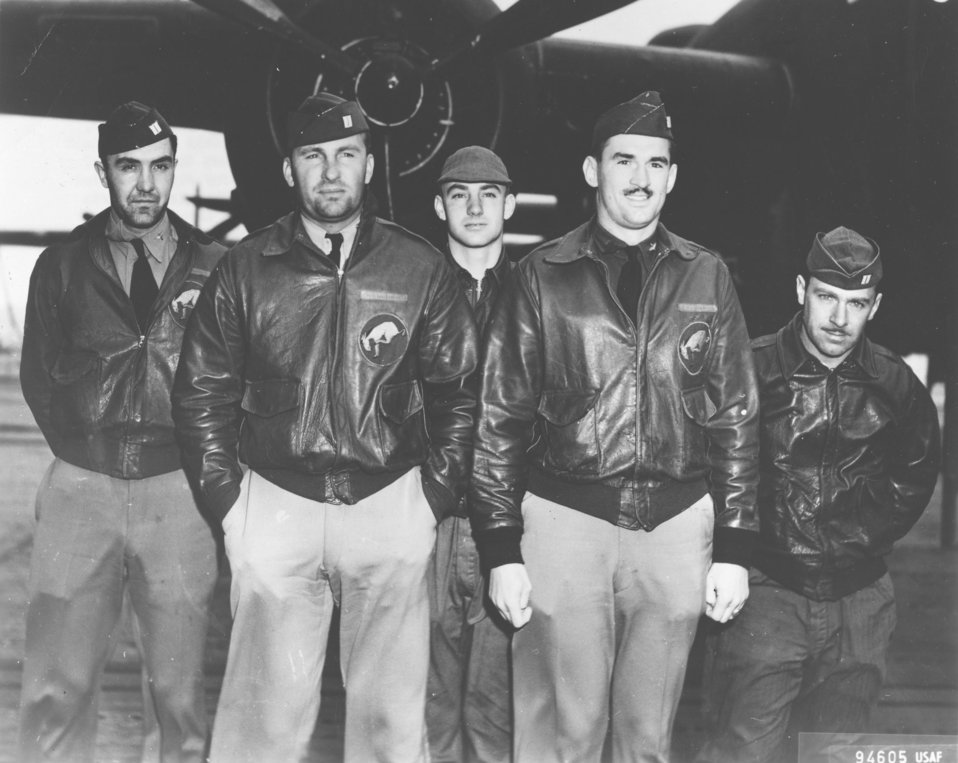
Doolittle Tokyo Raiders, Crew No. 6

Navigator Lt. Chase J. Nielsen stands with his air crew mates before the famed Doolittle Raid mission April 18, 1942. Crew No. 6 with the 95th Bombardment Squadron flew Plane #40-2298 to bomb targets in Tokyo. Front row: Lt. Dean E. Hallmark, pilot and Lt. Robert J. Meder, copilot; back row: Lieutenant Nielsen, Sgt. William J. Dieter, bombardier; and Sgt. Donald E. Fitzmaurice, flight engineer/gunner.